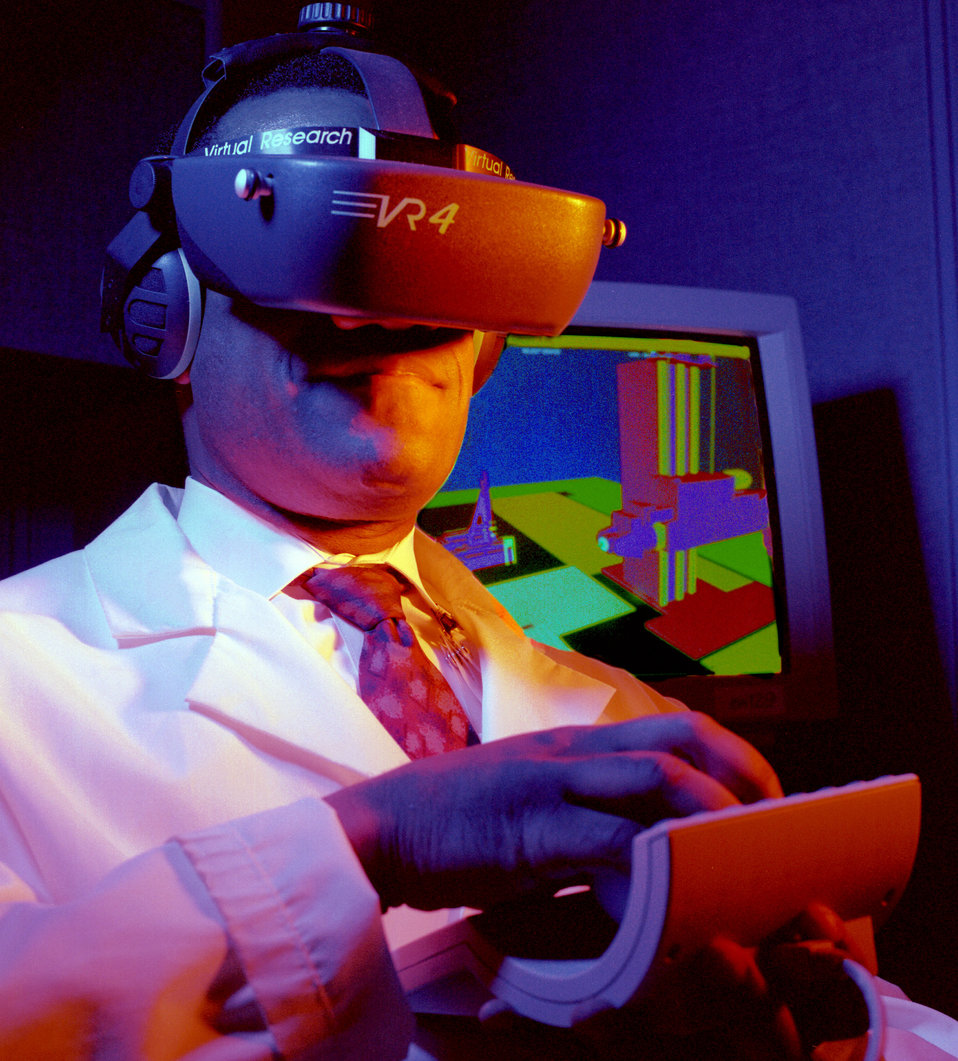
Visual Simulator Y-12 Oak Ridge

97-319-2 DOE photo by Lynn Freeny